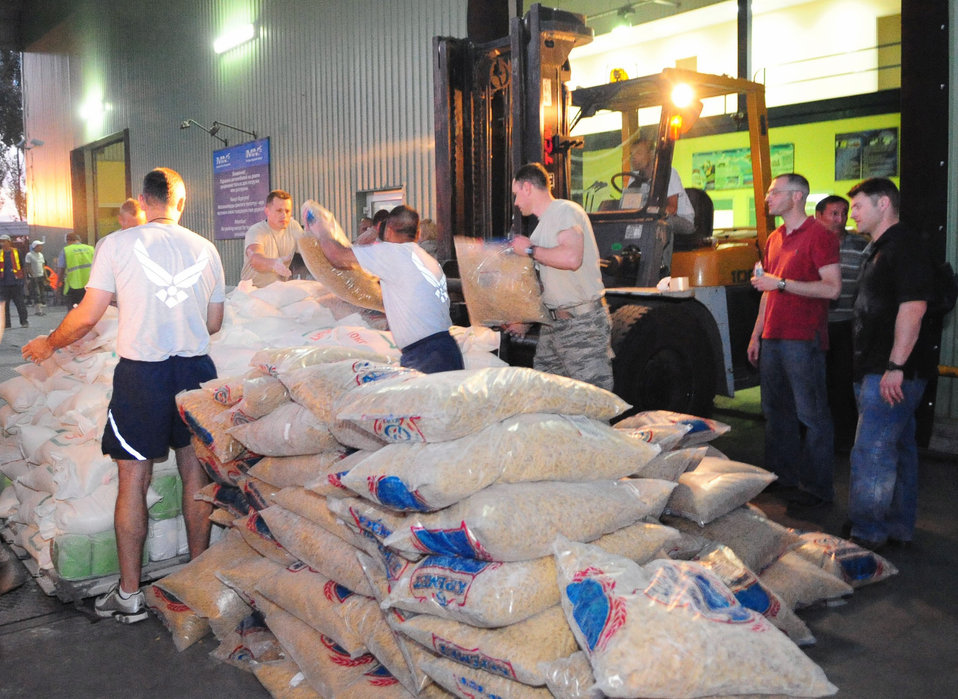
Airmen purchase, deliver food for Osh

Airmen from the Transit Center at Manas load food onto a pallet at the Manas International Airport in Kyrgyzstan June 13, 2010, for transportation to Osh, Kyrgyzstan. Transit Center and Department of State officials purchased flour, oil, pasta, tea, yeast, and other basics totaling more than 31,000 pounds for a humanitarian assistance delivery to the southern region of Osh.